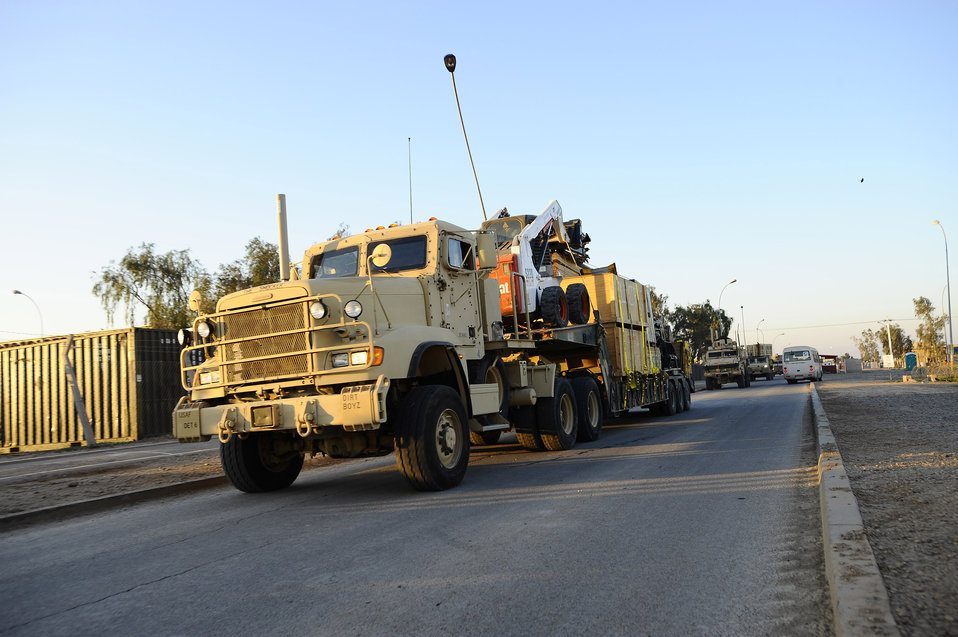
Air Force engineers answer the call from Soldiers in Iraq

A mine-resistant ambush-protected vehicle and heavy-expanded mobility tactical truck convoy down a road Dec. 11 at Joint Base Balad, Iraq. Airmen with the 732nd Expeditionary Civil Engineer Squadron Det. 6 undertake outside-the-wire construction projects for the Army.